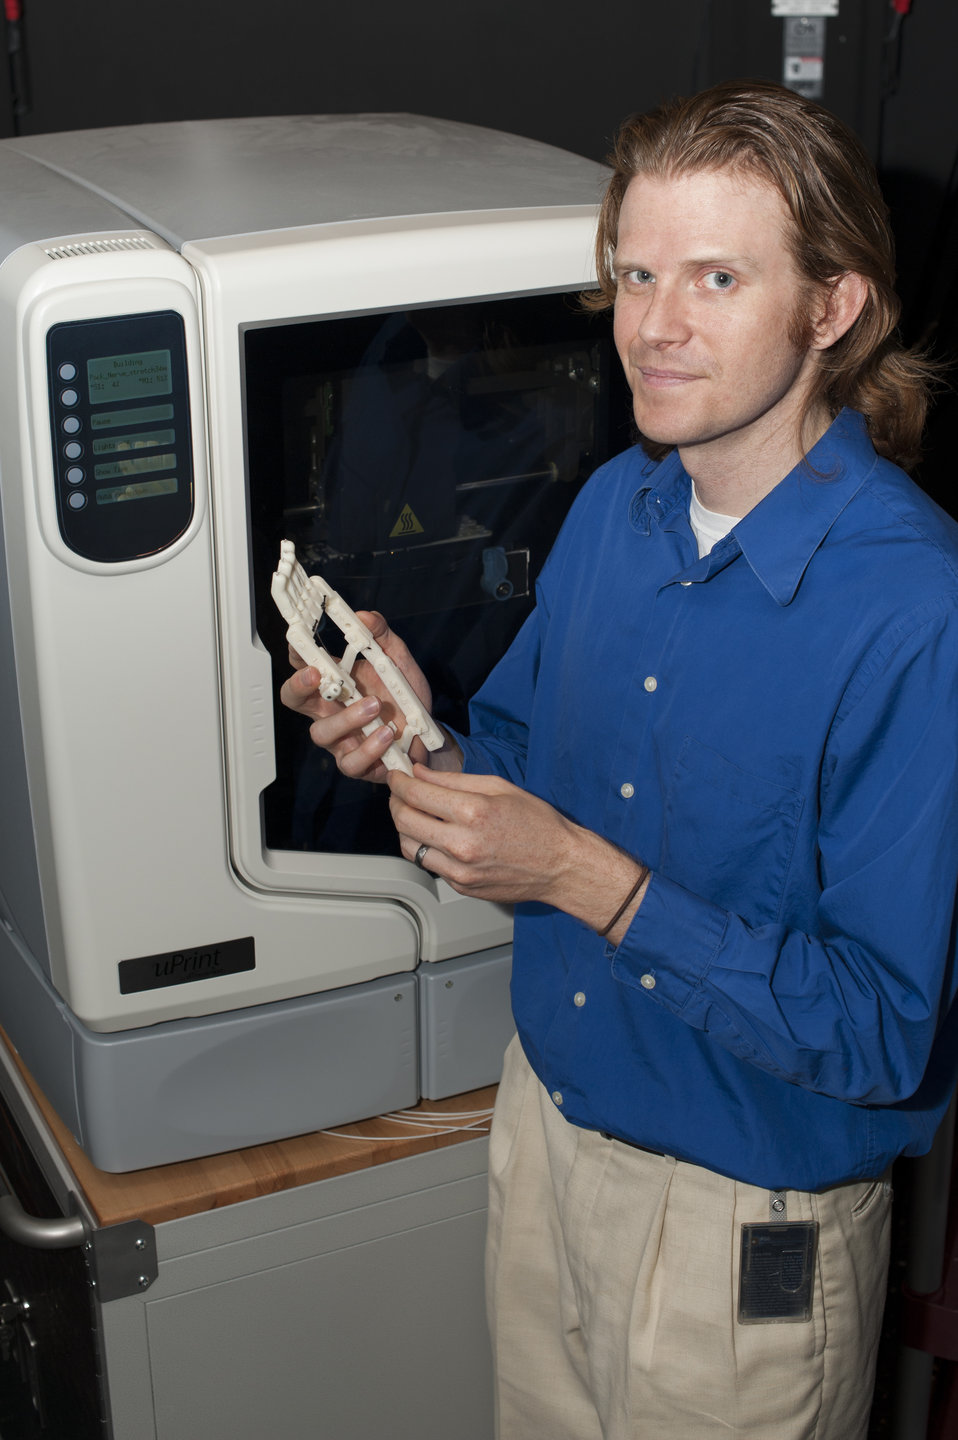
3-D Printing at FDA (8205)

FDA research engineer James Coburn holds a 3D-printed RoboHand, a prosthetic for children with amnionic banding syndrome, an illness that can prevent fingers from developing in children. James Coburn uses the 3-D printer (background) in his work at FDA.

3-D printing—the process of making a three-dimensional solid object of virtually any shape from a digital model—is spurring innovation in manufacturing, dramatically reducing the time required to design new products and allowing designs to be built that were not possible before. At FDA, we’re using it to expand both our research and our review of new and innovative medical products. To learn more, read this FDA Voice blog post:

• FDA Goes 3-• FDA Goes 3-D